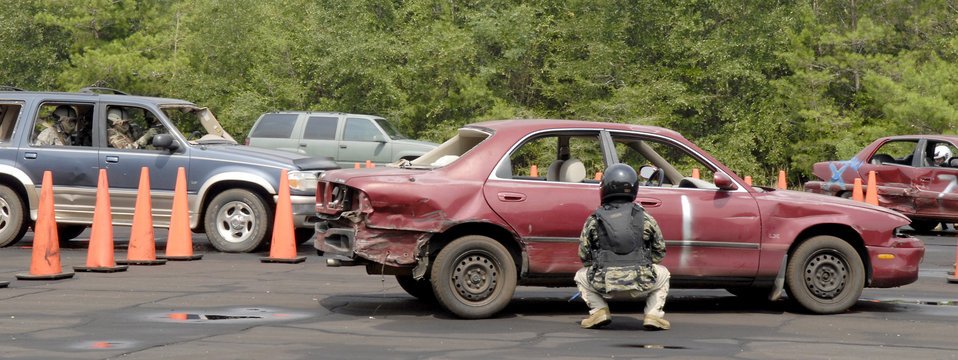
Defensive driving training course students enter the danger zone as the instructors, 1st Special Operations Support Squadron Range Support flight opposition forces members, playing adversaries, wait to strike. The training took place at Eglin Range, Fla., July 23, 2010.